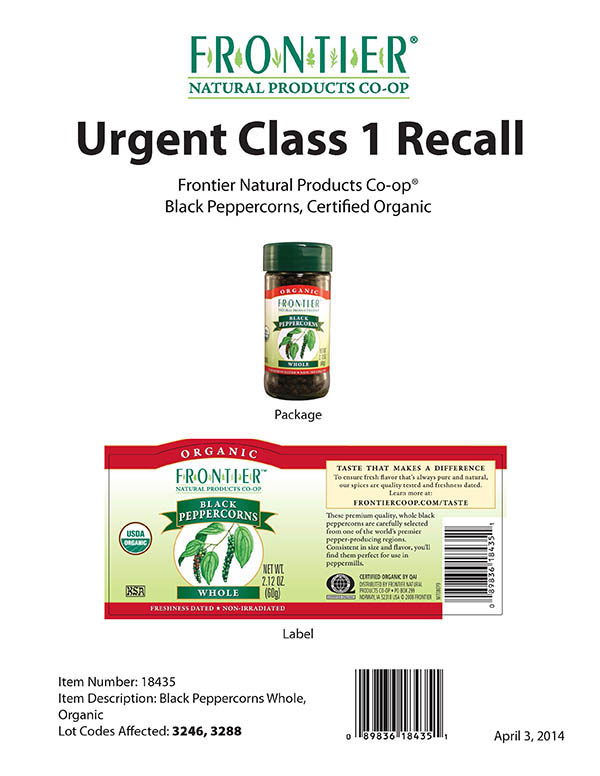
RECALLED – Organic Black Peppercorns

April 4, 2014 – Product Recall – Frontier Natural Products Co-op Initiates Voluntary Class 1 Recall Due to Possible Health Risk from Organic Black Peppercorns.